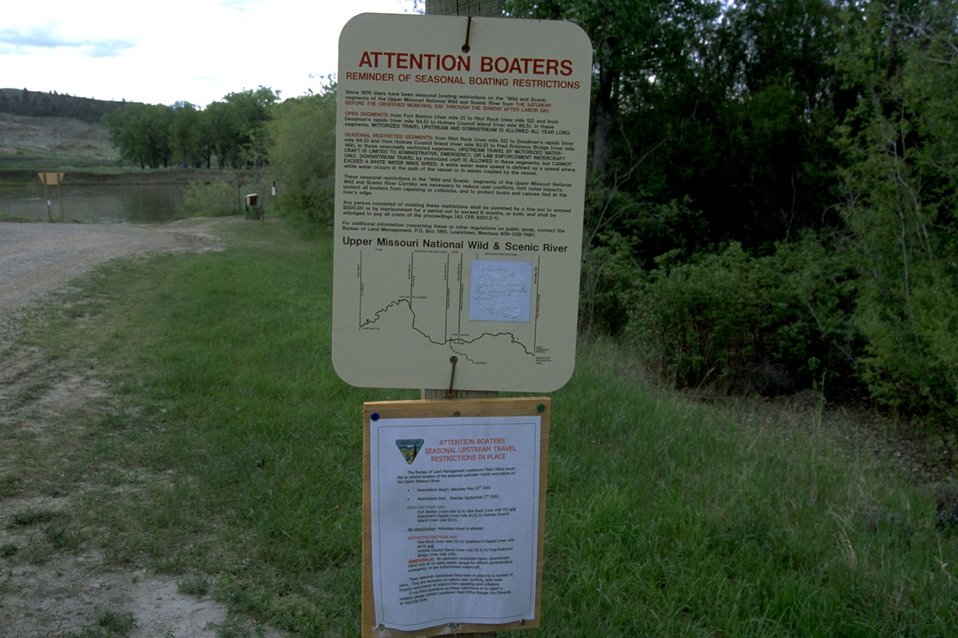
Regulation signs at Kipp Recreation Site